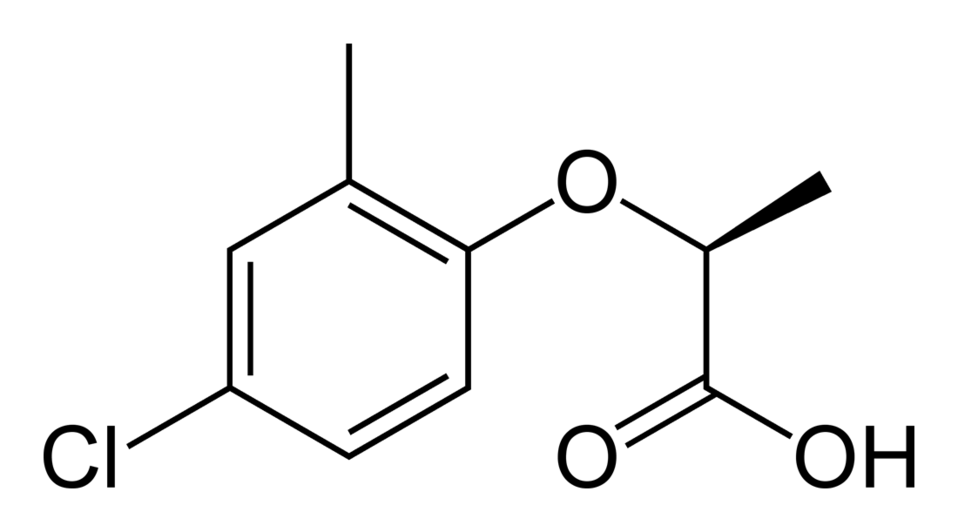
Skeletal formula of the (R) enantiomer of mecoprop, C10H11CIO3.